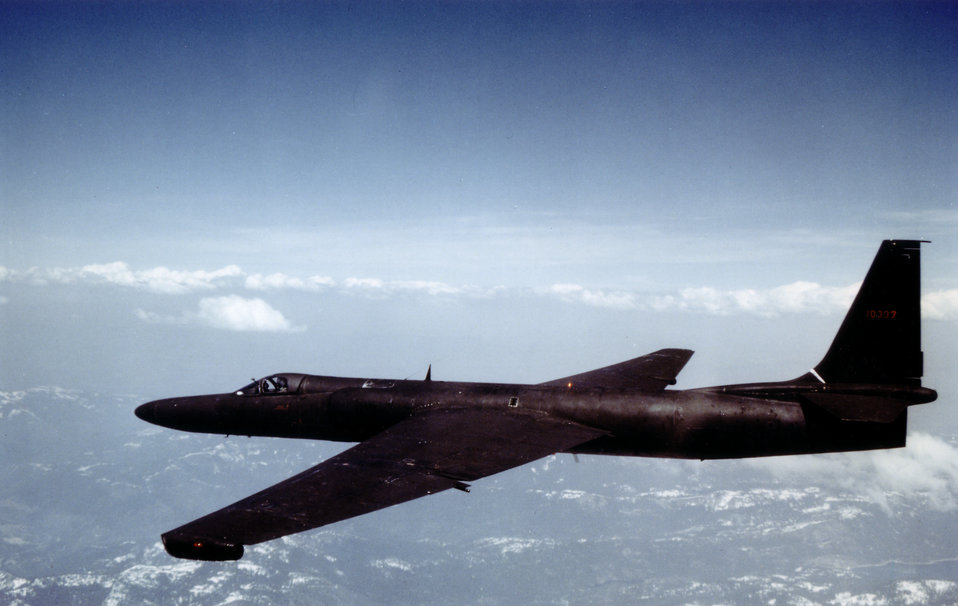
U-2

1950's -- The U-2 made its first flight in August 1955. On Oct. 14, 1962, the U-2 photographed the Soviet military installing offensive missiles in Cuba.